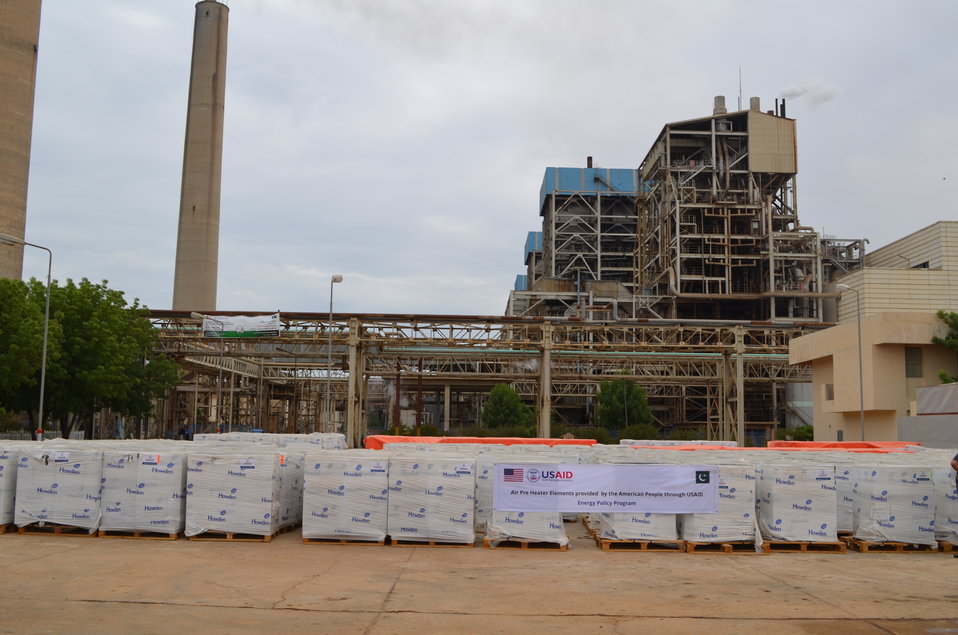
Machinery provided to Jamshoro Thermal Power Station under the USAID-funded repair and rehabilitation.